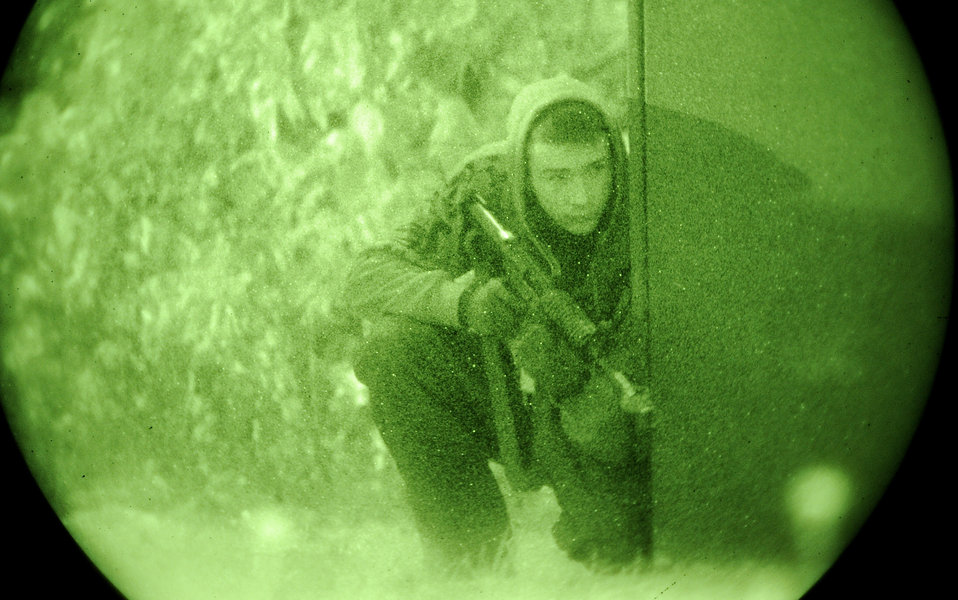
Night exercise at Osan Air Base

An